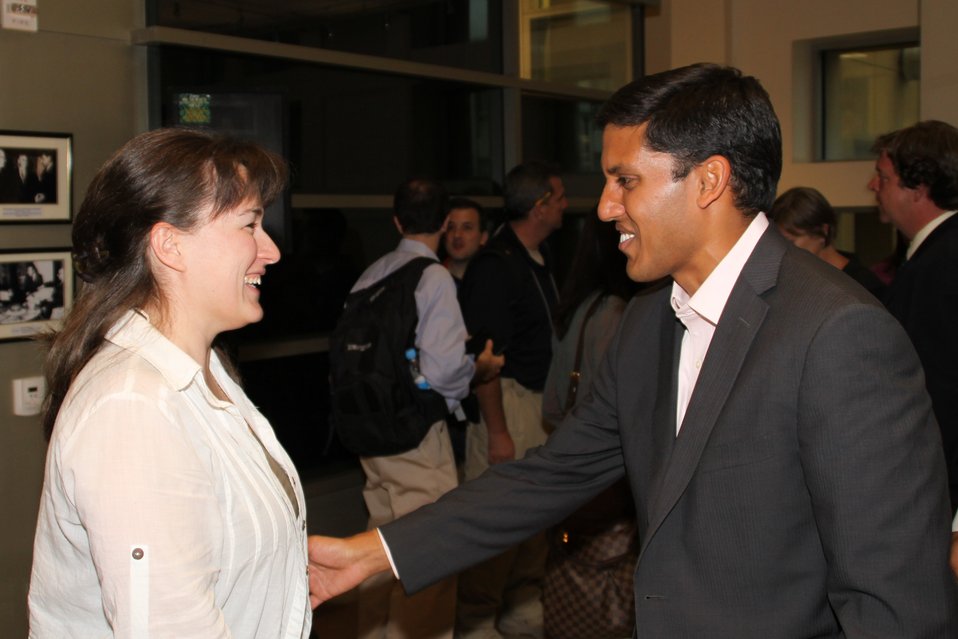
US Embassy Town Hall July 21, 2010